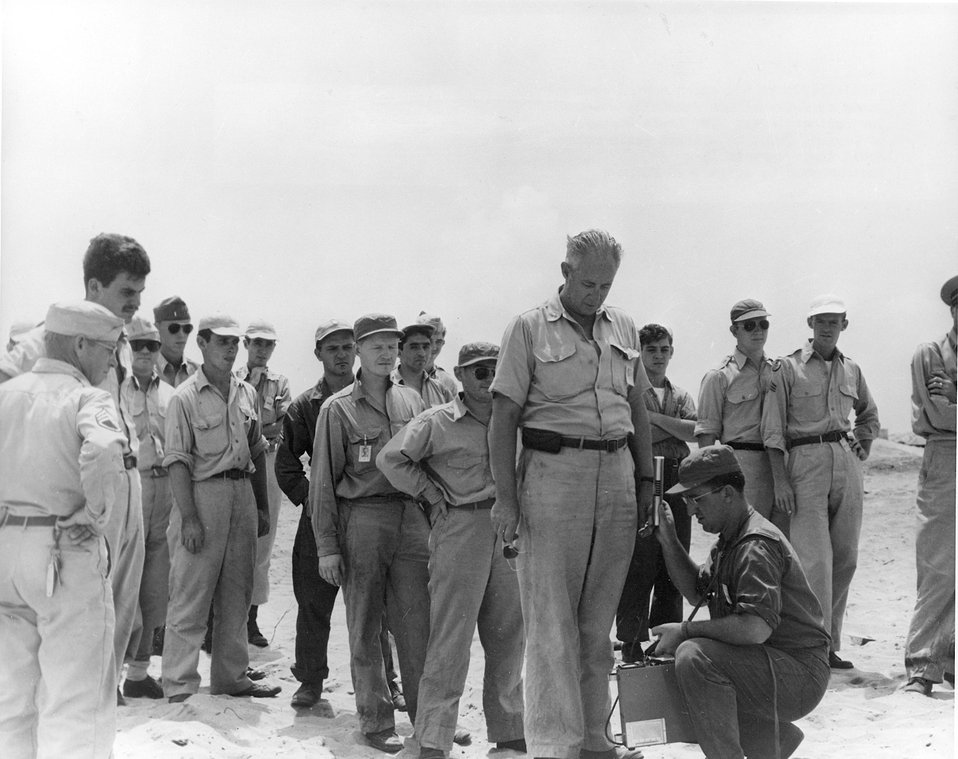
April and May 1948...Participants in the experimental bomb at Eniwetok are checked for radioactivity.